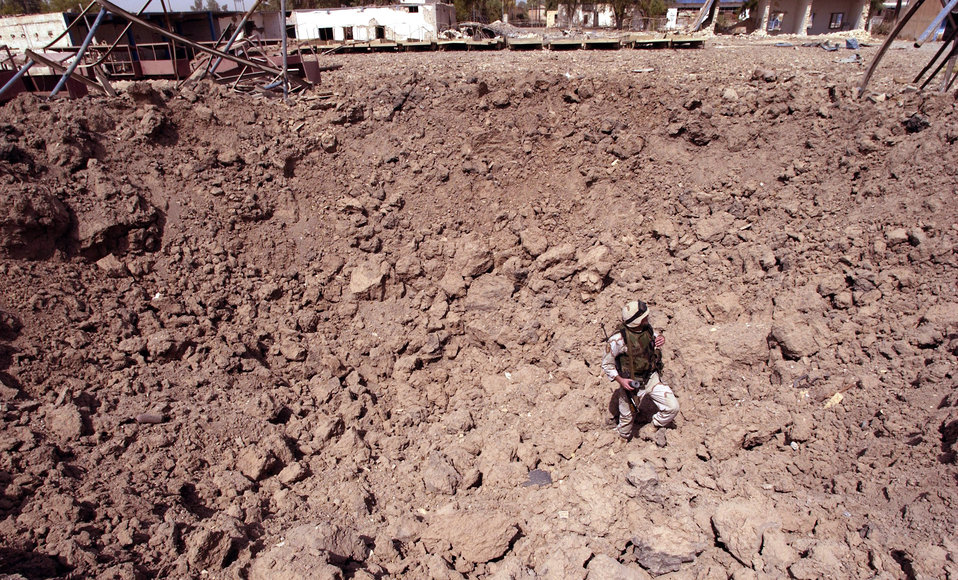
Crater rater

BAGHDAD, Iraq -- Master Sgt. Douglas Frickey measures a crater created by a coalition bomb during Operation Iraqi Freedom. The air strike March 28 destroyed a maintenance facility that supported Iraqi surface-to-air missile operations. Frickey is one of nearly 100 experts from the United States, United Kingdom and Australia who are currently visiting up to 500 impact points targeted by coalition forces during OIF. The team will assess how well the weapons achieved their intended effects and possibly improve future operations.